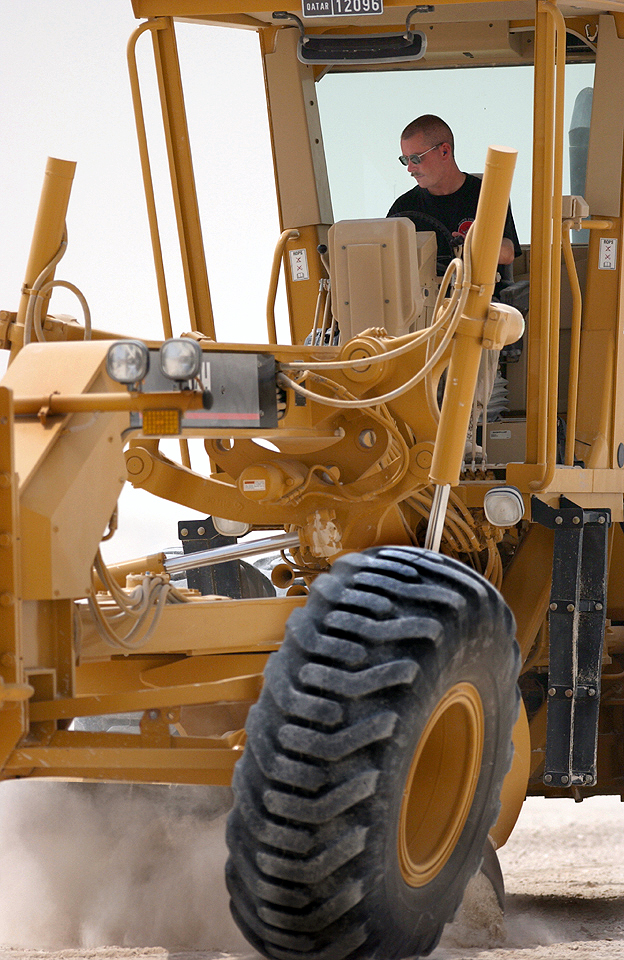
Earth mover

OPERATION IRAQI FREEDOM -- Staff Sgt. Robert Dalton grades dirt to level an area for an industrial warehouse at a forward-deployed base in Southwest Asia. Dalton is a heavy-equipment operator assigned to the 379th Expeditionary Civil Engineer Squadron.